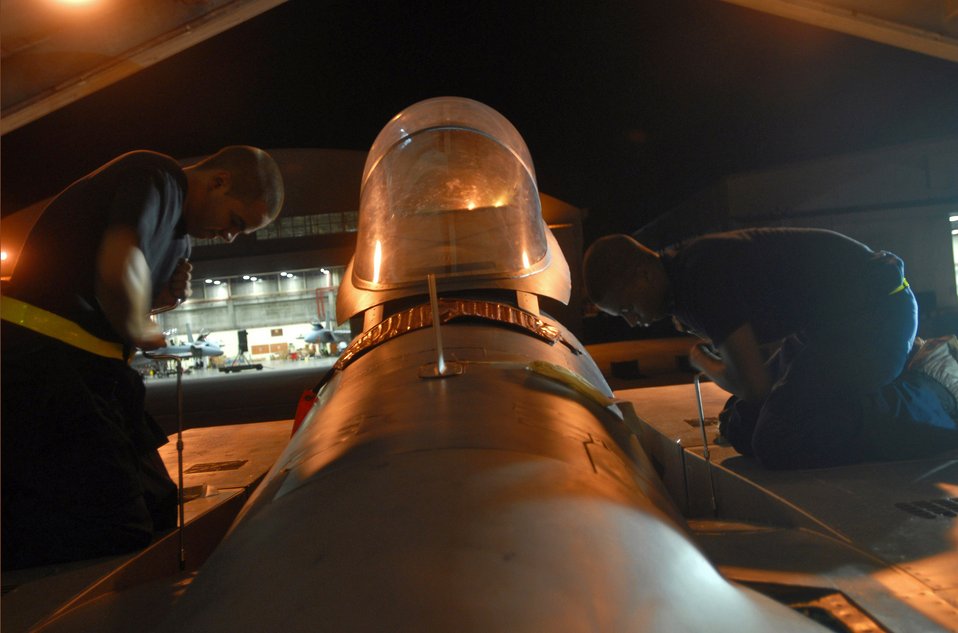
Crew chiefs work around the clock

Airmen 1st Class Anthony Deleon (left) and Curtis Manley use speed handles to place panels on an F-15 Eagle during an Aug. 23 base exercise at Kadena Air Base, Japan. By doing this they ensure the panels are in place and won't fall off during flight. The base conducted a three-day base exercise to demonstrate its ability to deploy and generate aircraft. Both Airmen are phase crew chiefs with the 18th Equipment Maintenance Squadron.